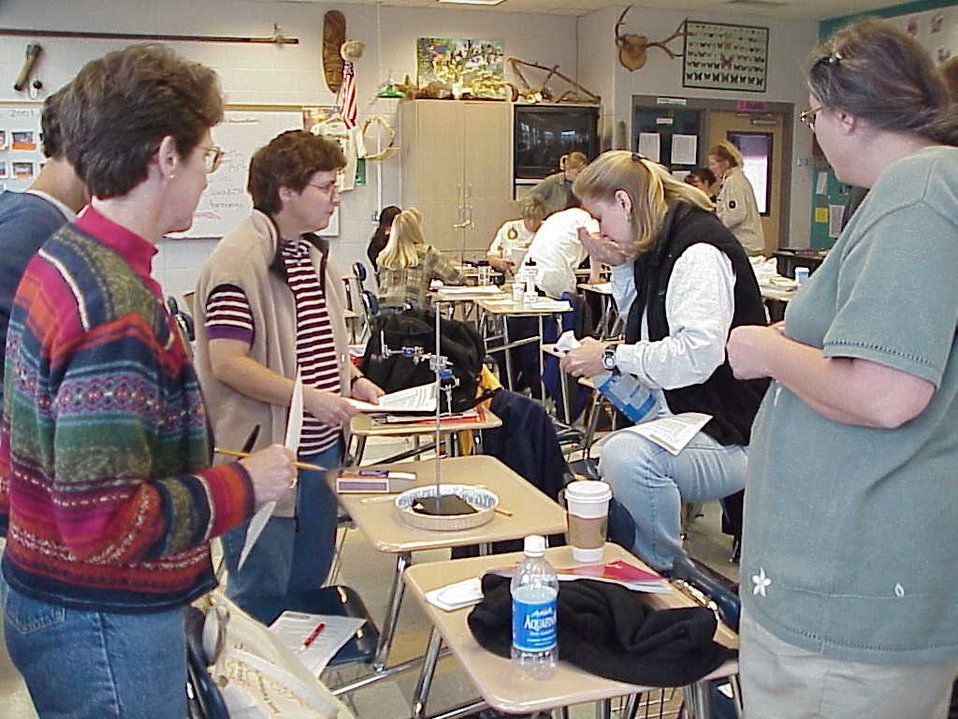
Environmental Education Fire Workshop Timberline High School Fall 2000